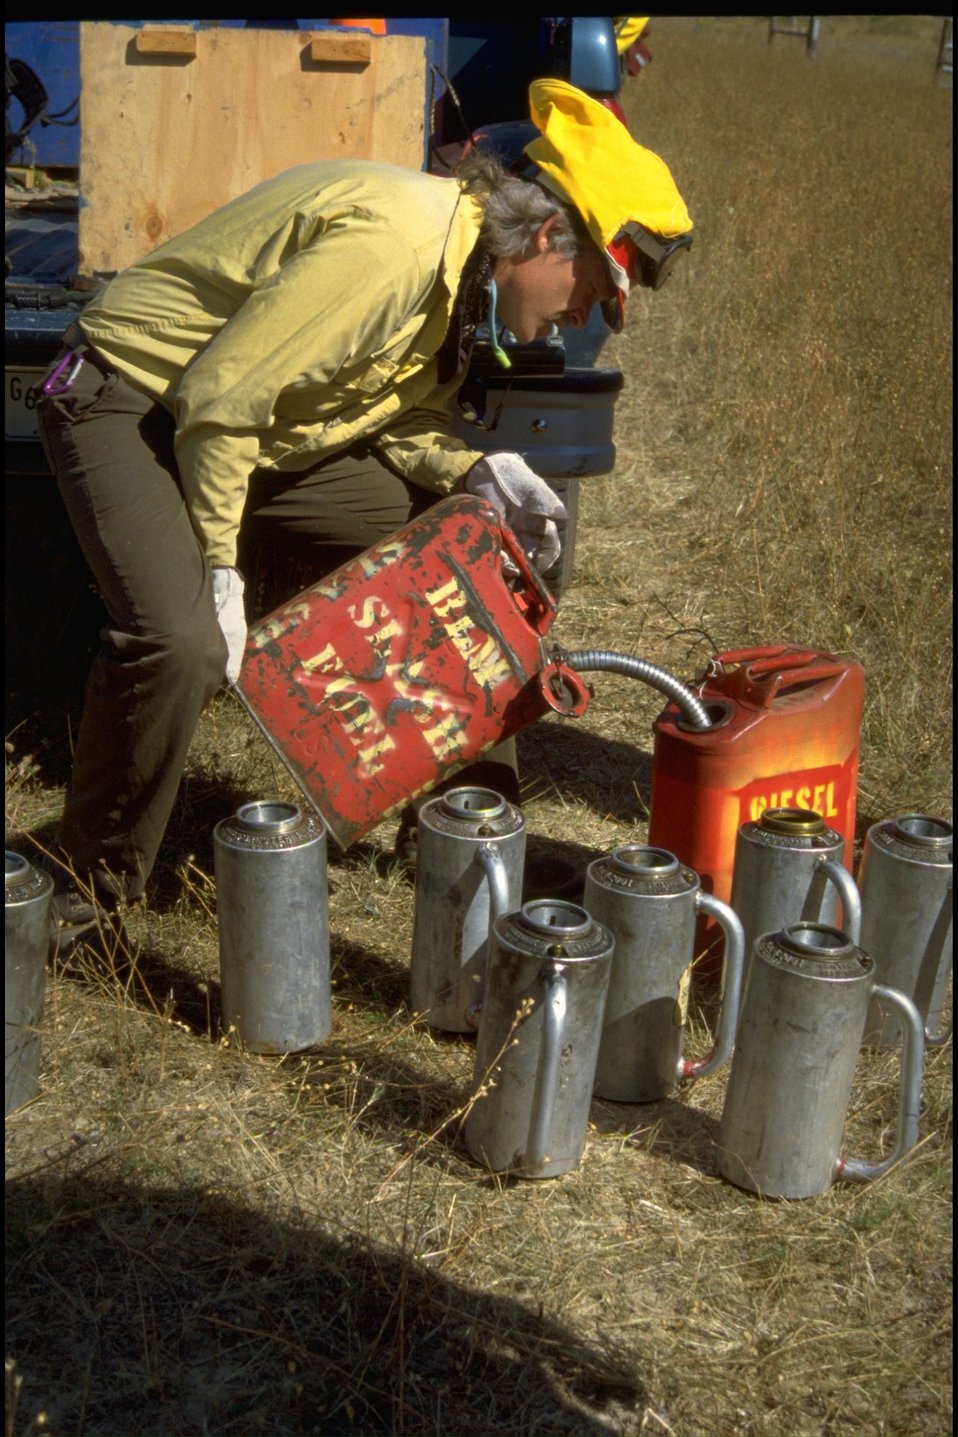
Long Tom ACEC burn (Paul Walker).